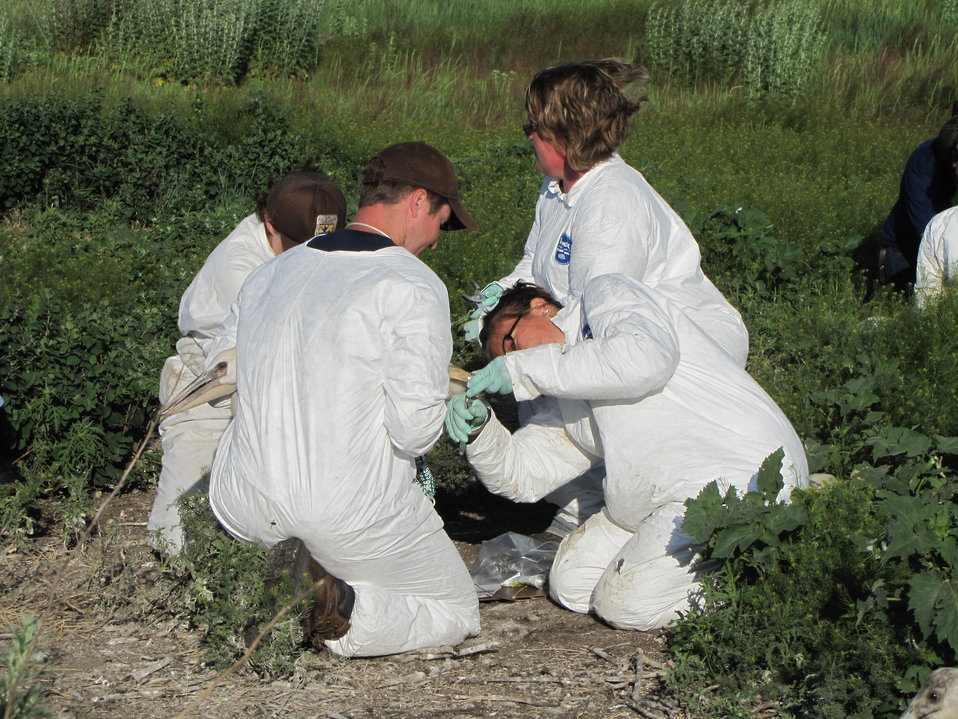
Pelican Banding at Chase Lake NWR

Staff at Chase Lake National Wildlife Refuge take care in handling the young birds.